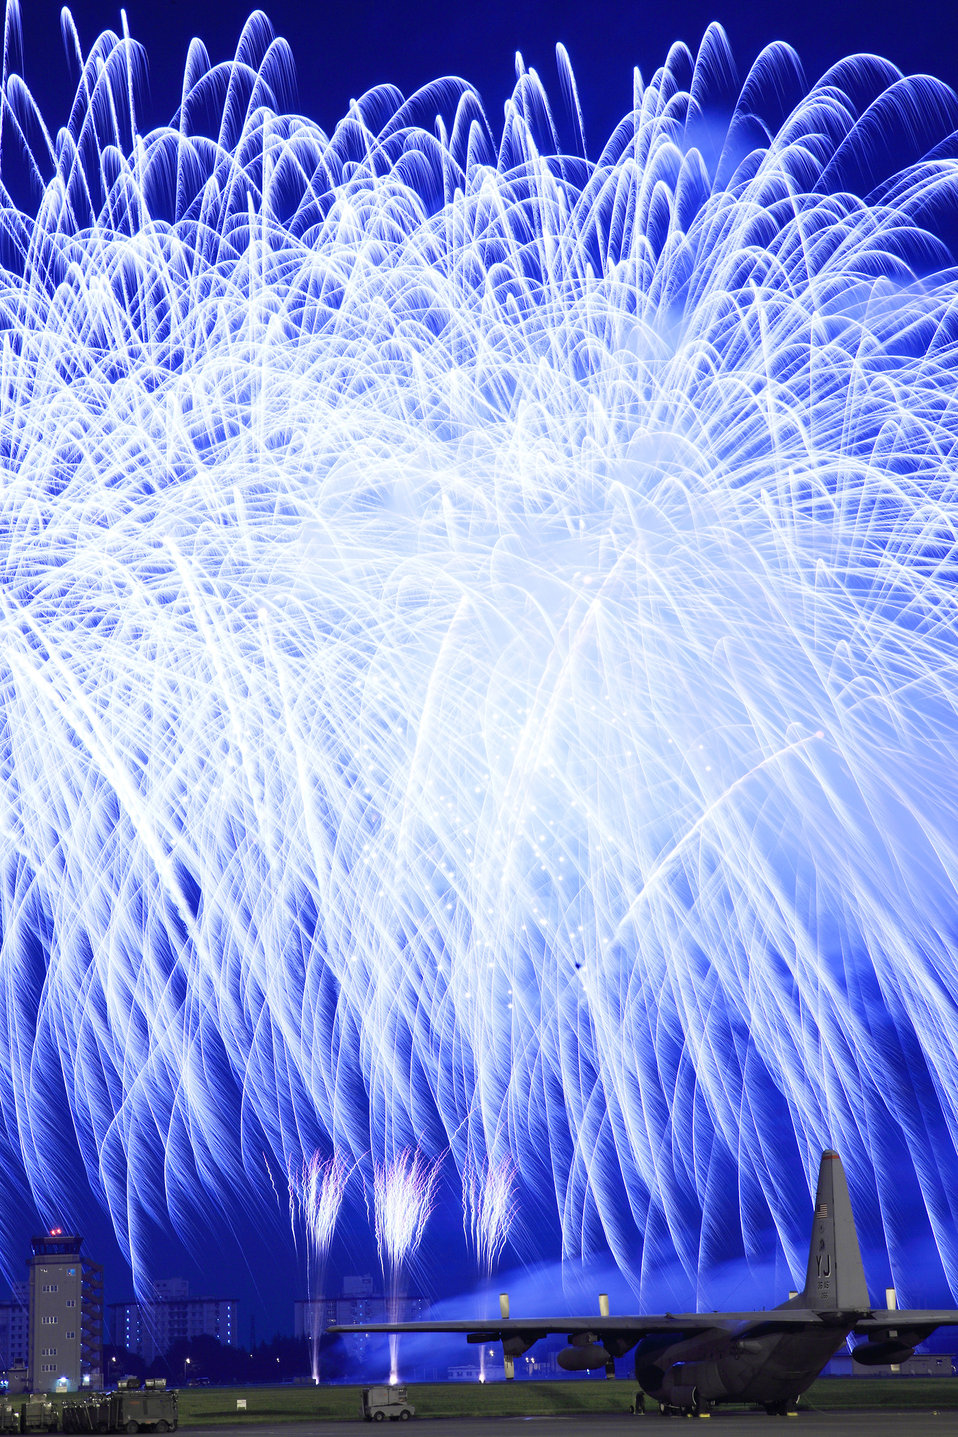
Blaze of friendship

A fireworks display capped off the 2009 Yokota Air Base Japanese-American Friendship Festival Aug 22-23. More than 170,000 people attended the event designed to bolster the bi-lateral relationship shared by the United States and Japan. In addition to static displays and live music, the festival offered a variety of American and Japanese food.